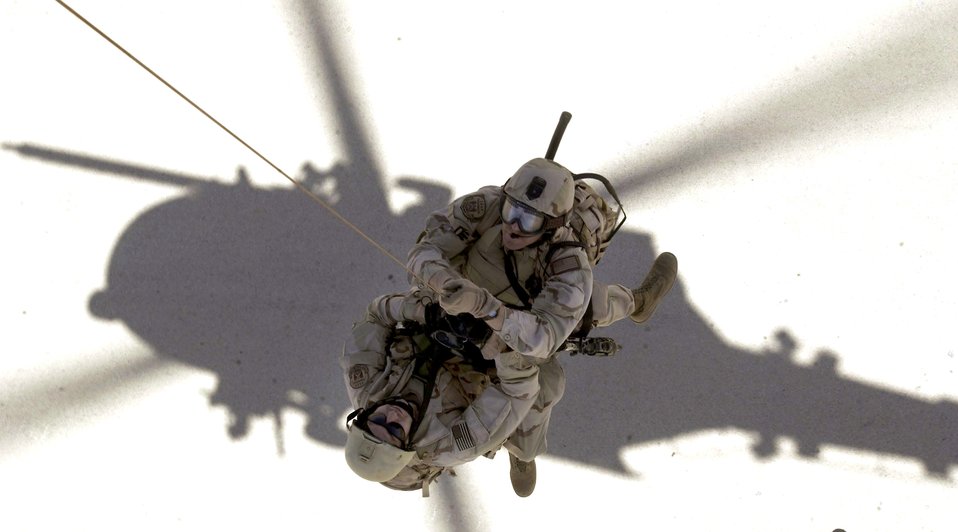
Career fields meld expertise in recovery missions

Pararescuemen from the 304th Rescue Squadron are hoisted up to an HH-60G Pavehawk during Operation Iraqi Freedom in April 2003 at Tallil Air Base, Iraq.